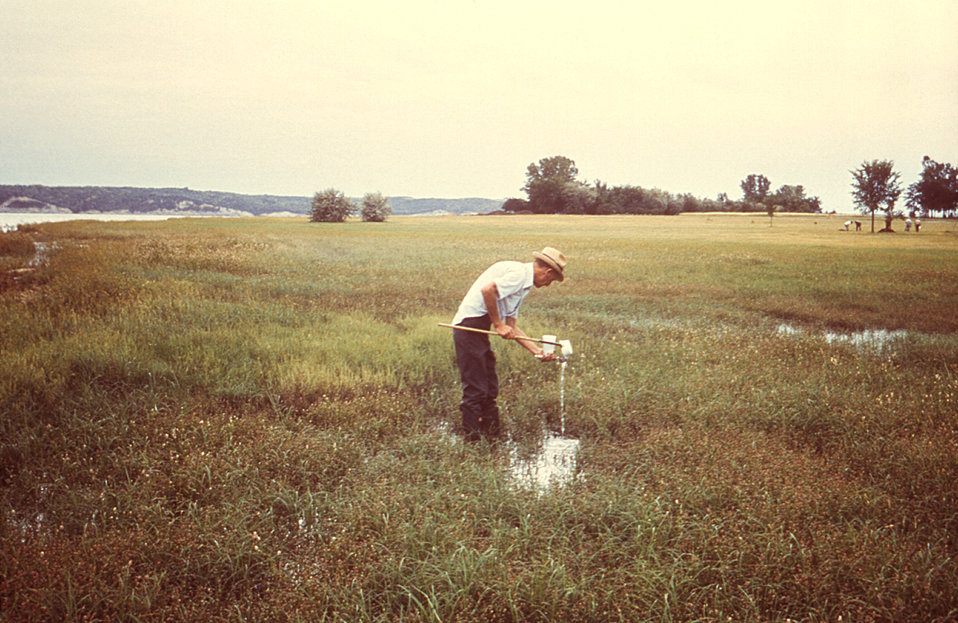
This 1977 photograph depicted an entomologic field technician who was in the process of using a dipper while analyzing the high water region of an area reservoir for the presence of possible arboviral vector larvae.